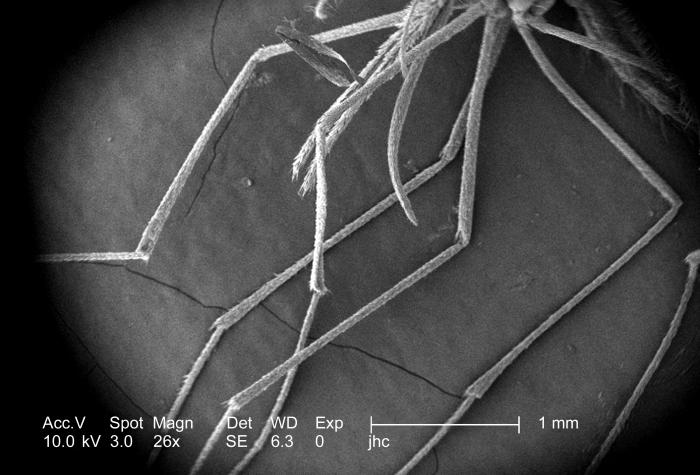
At a very low magnification of only 26x, this scanning electron micrograph (SEM) revealed some of the morphologic features displayed by an Anopheles gambiae mosquito. Included in the field of view was the curved sheath-covered proboscis, which the insect uses to penetrate the host's skin in order to obtain a blood meal; two palps, which lie to each side of the proboscis, and pick of tactile and chemical changes in its environment; and various aspects of the mosquito's six jointed legs, placing it in the Phylum of Arthropoa.